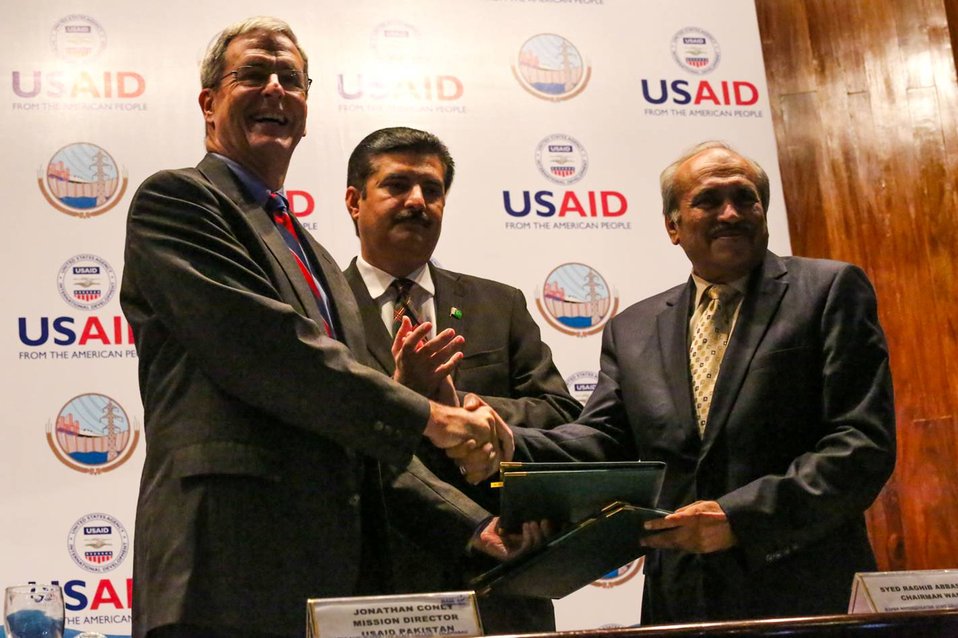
Islamabad, September 12, 2012 - Project Launch Ceremony of Waran Canal Irrigation System